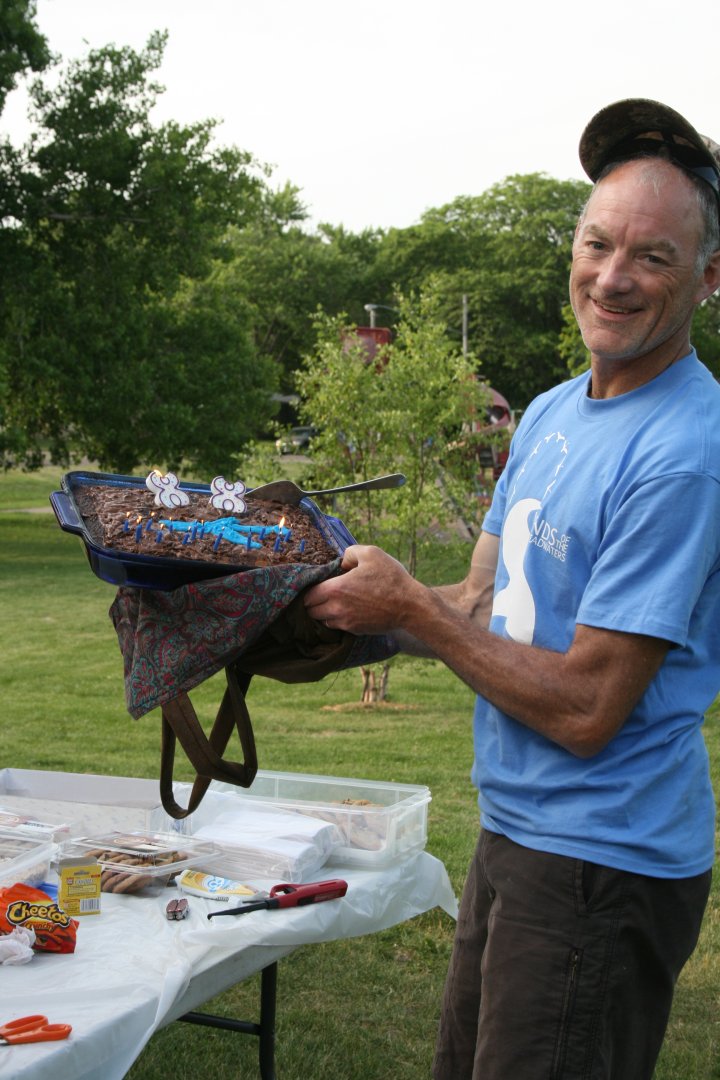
Friends President Paddock offers a refuge birthday cake

Friends of the Refuge Headwaters President Todd Paddock presents a blue goose birthday cake in honor of the Refuge’s 88th birthday.